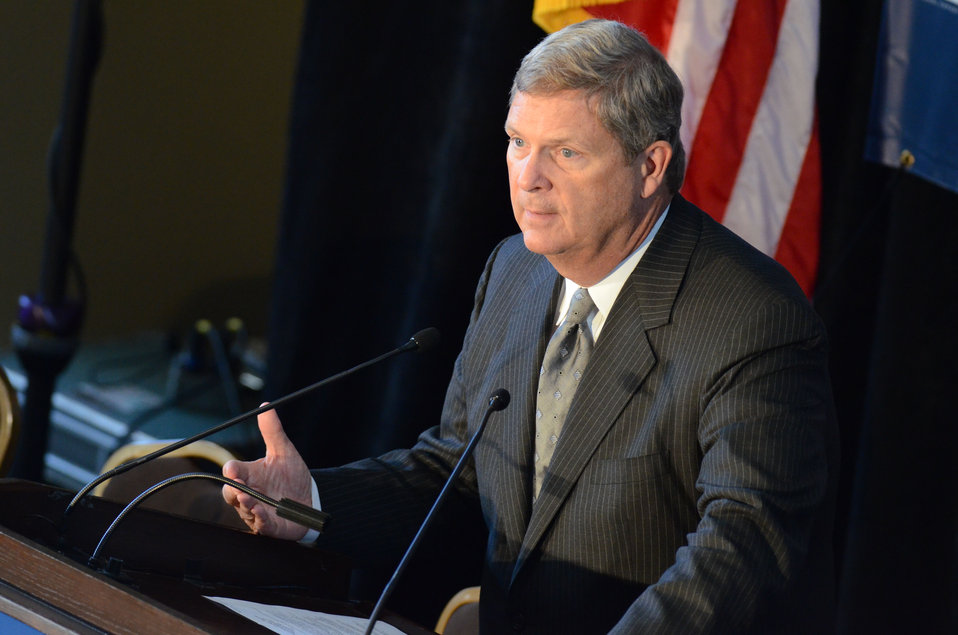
Agriculture Secretary Tom Vilsack speaks at the National Export Initiative (NEI) Small Business Tour in Milwaukee, WI, on Wednesday, August 3, 2011. An important goal of the NEI is to provide additional assistance to small and medium-sized businesses, which are major drivers of job creation. The NEI is assisting small and medium-sized businesses win more foreign government contracts, find buyers worldwide, participate in more trade missions and trade shows, receive more export financing, and learn new ways to sell products and services overseas.